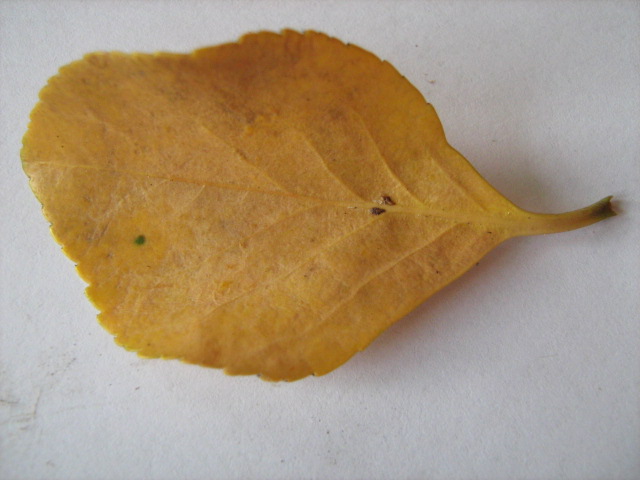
feuille tombée